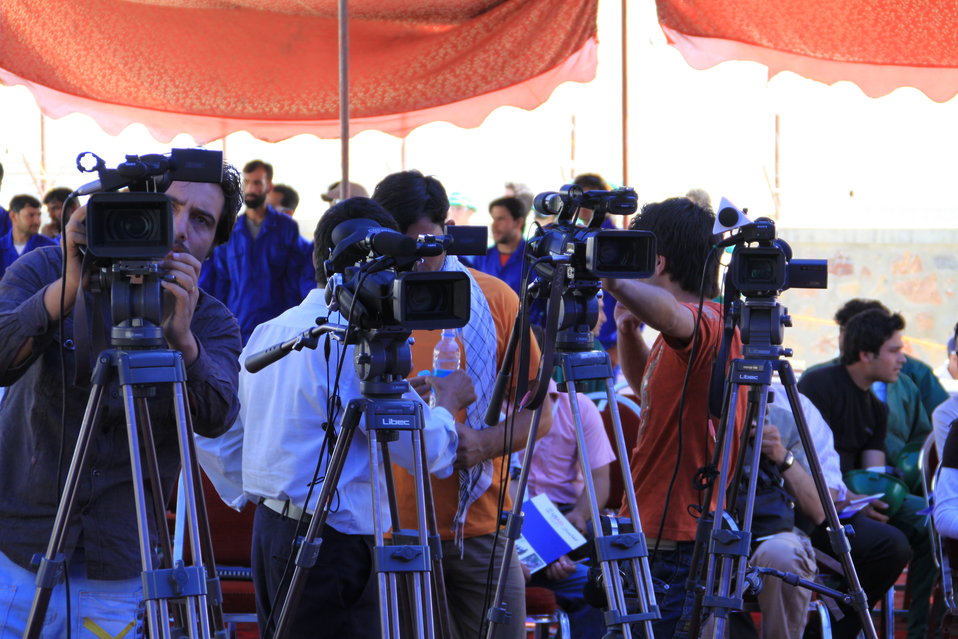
105 MW Tarakhil Power Plant Handover